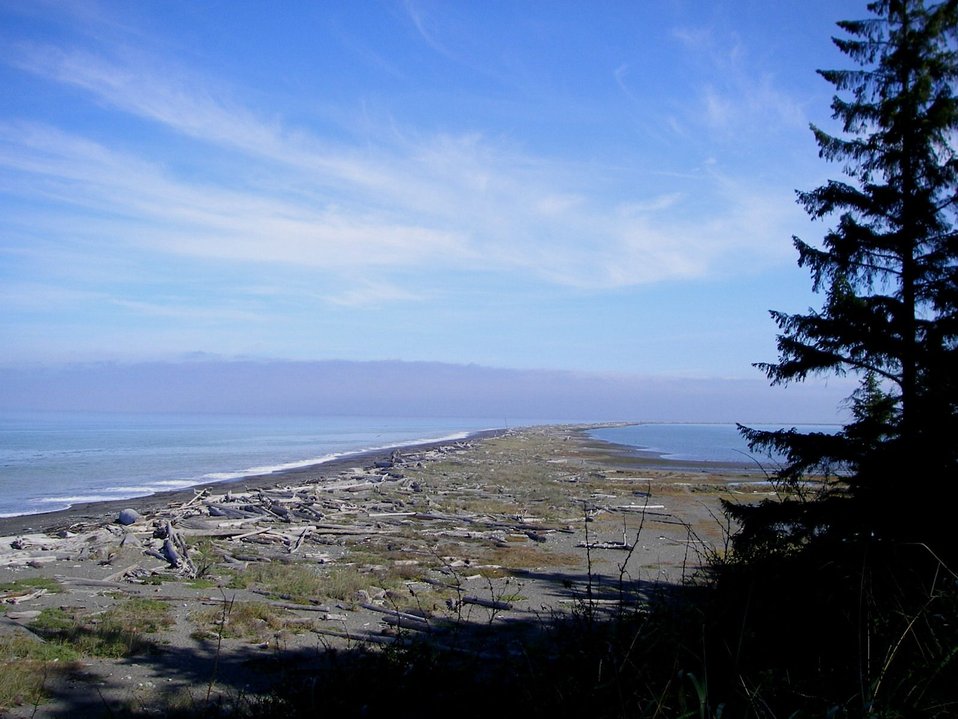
Dungeness Spit

Dungenesss National Wildlife Refuge, Washington.